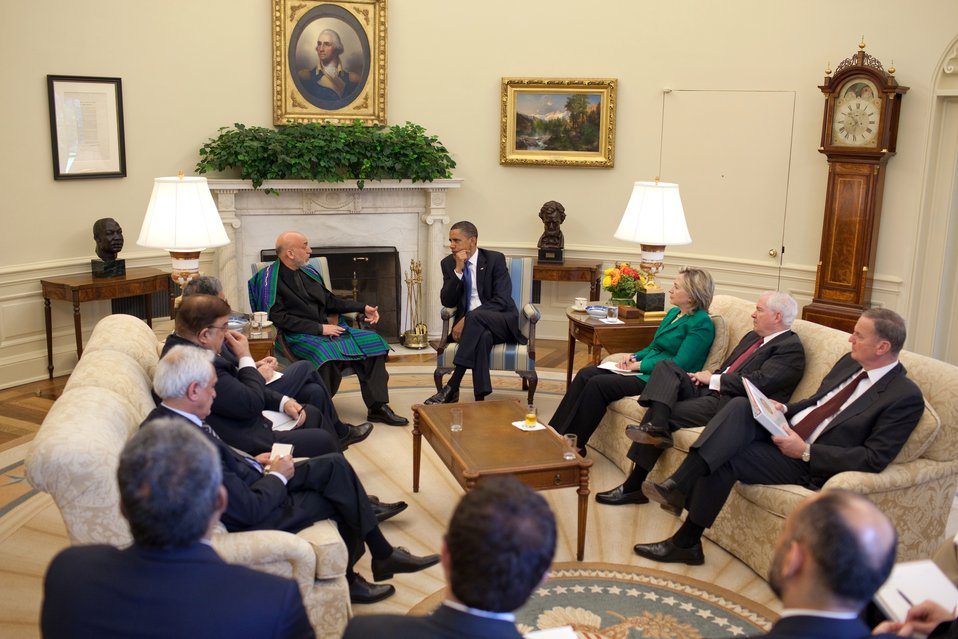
President Obama and His Ranking-Cabinet Members Hold Bilateral Meeting With Afghan President Karzai

President Barack Obama holds a bilateral meeting with President Hamid Karzai of Afghanistan in the Oval Office at the White House in Washington, D.C., May 12, 2010. Participants include: Lt. Gen. Douglas (Doug) Lute, Special Assistant for Afghanistan and Pakistan, General Stanley McChrystal, Commander International Security Assistance Force, Secretary of State Hillary Rodham Clinton, Secretary of Defense Robert Gates, National Security Advisor Gen. James L. Jones, Deputy National Security Advisor Tom Donilon, Chairman of the Joint Chiefs of Staff Admiral Mike Mullen, and United States Ambassador to Afghanistan Karl Eikenberry. Afghans participants include: Dr. Zalmai Rassoul, Dr. Rangin Spanta, Said Tayeb Jawad, Gen. Rahim Wardak, Mohammed Haneef Atmar, Dr. Hazrat Zakhilwal, Mohammed Asif Rahimi, Dr. Ashraf Ghani Ahmadzai, and Mahammad Masoom Sanekzai.